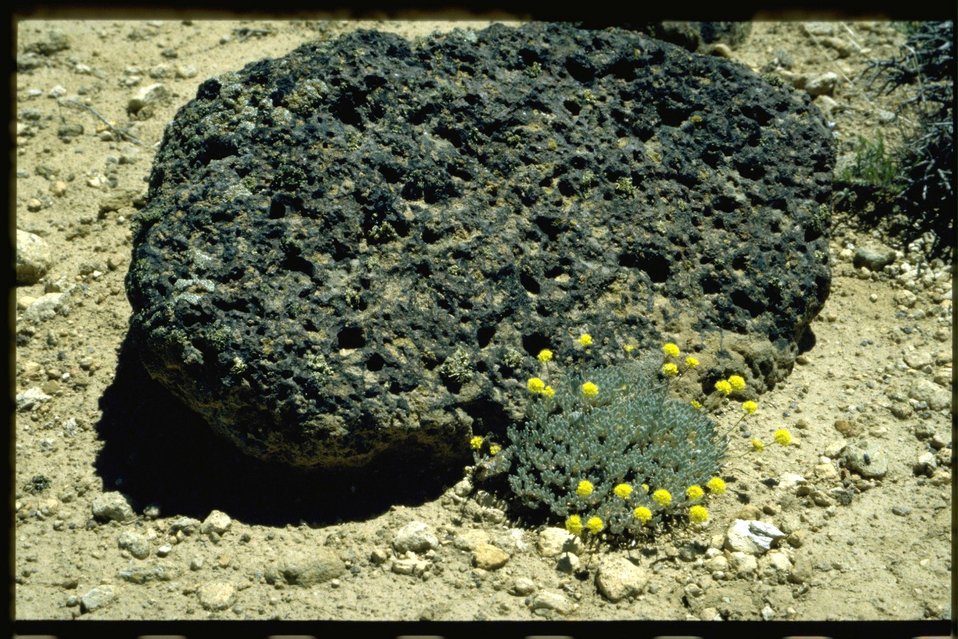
Farshot of buckwheat habitat.